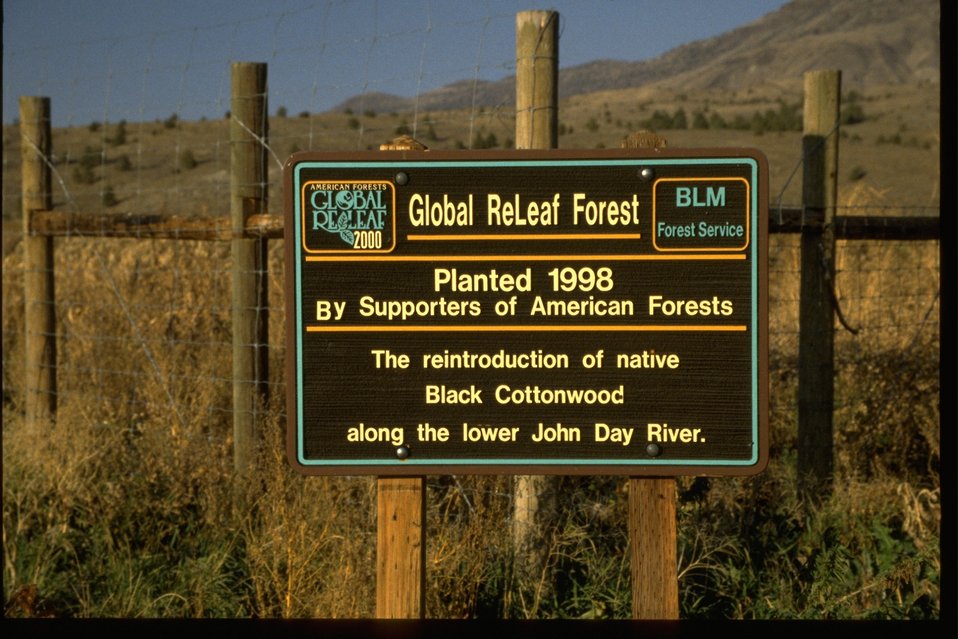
Global ReLeaf Forest" sign along the John Day River.